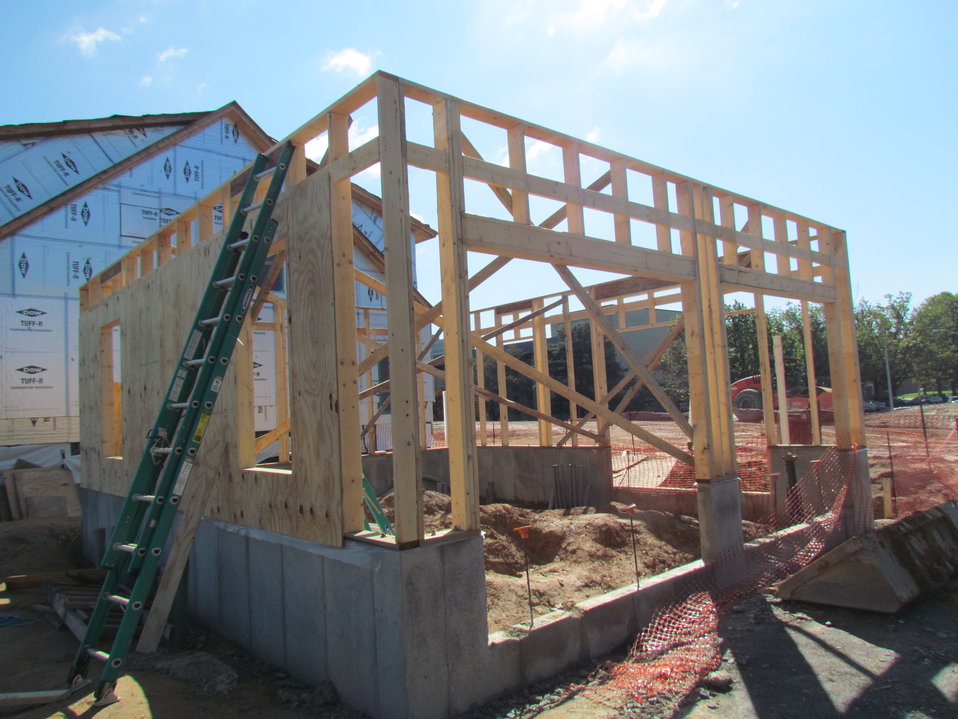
Net-Zero Energy Residential Test Facility - Photo showing framing of detached garage. This garage is connected by a breeze way to the house. The garage will be used to house the control and measurement equipment associated with the facility. One bay of the garage is reserved for a future electric vehicle.